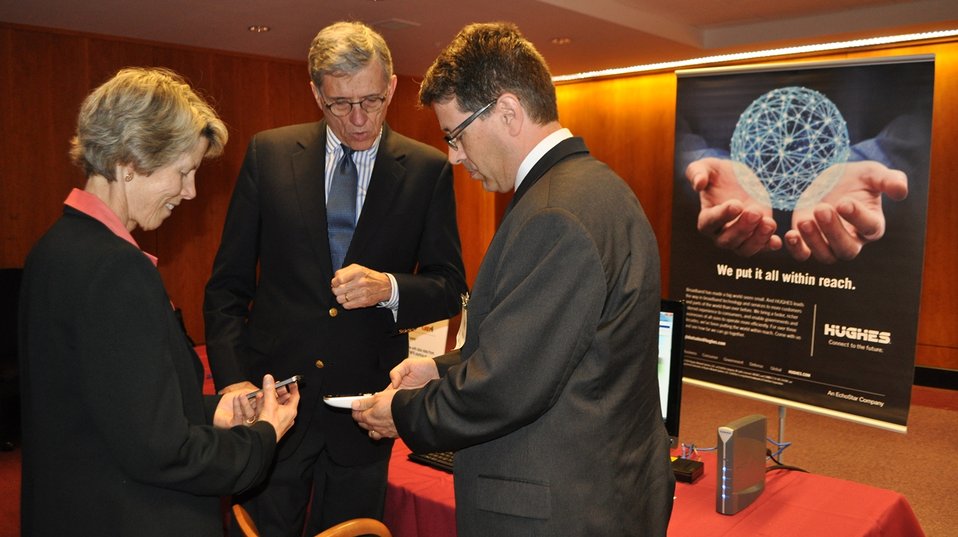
5.14.2014 Satellite Technology Demonstration

Chairman Tom Wheeler at the Satellite Technology Demonstration